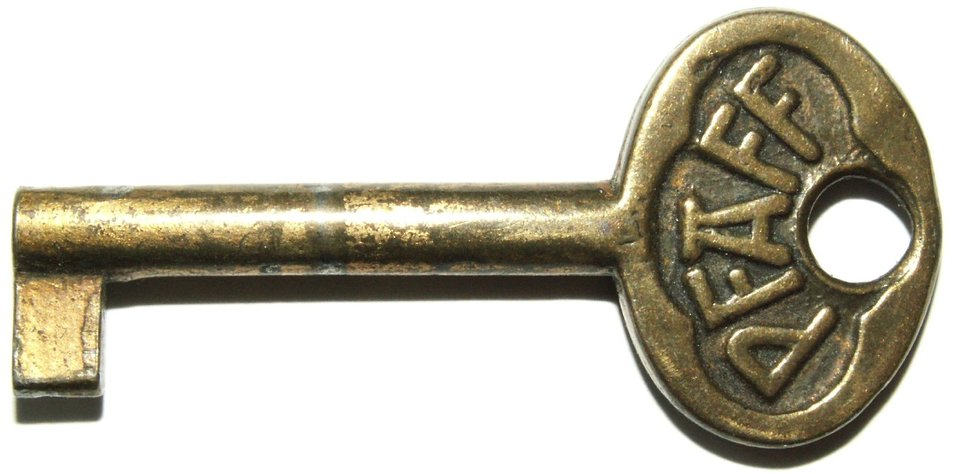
PaffSchlüssel